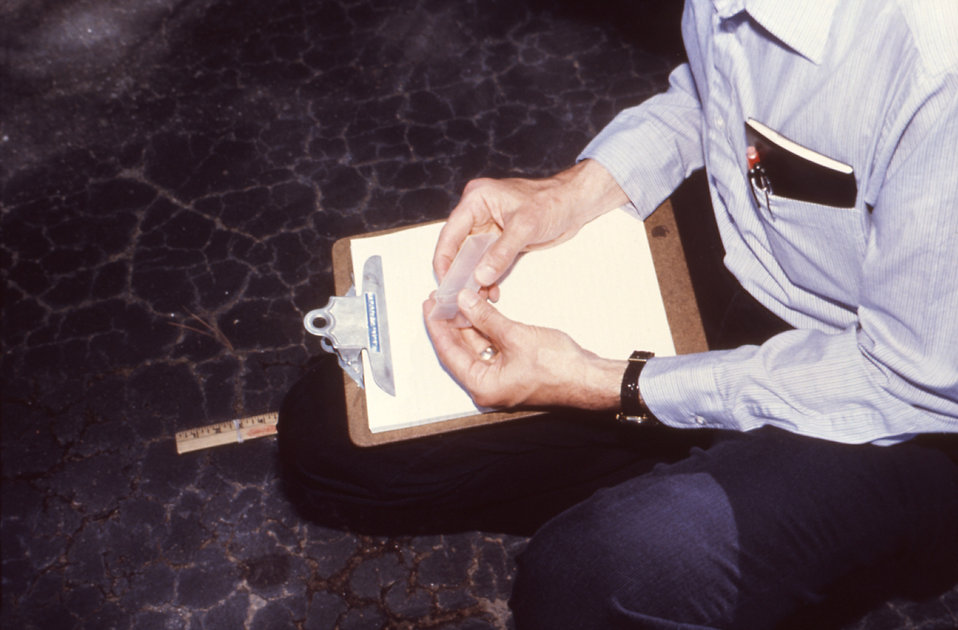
This 1981 photograph depicted a field technician as he handled a stack of fresh glass microscope slides and a clipboard to be used to facilitate in the collection of data during an arbovirus vector field study.